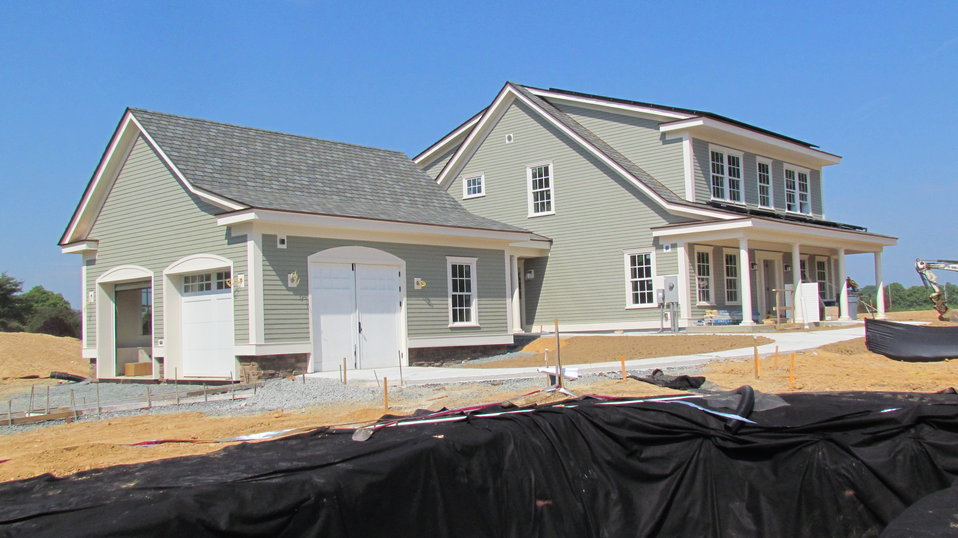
Photo showing west side and front of facility. Painting of siding completed and sidewalk/diiveway nearing completion.